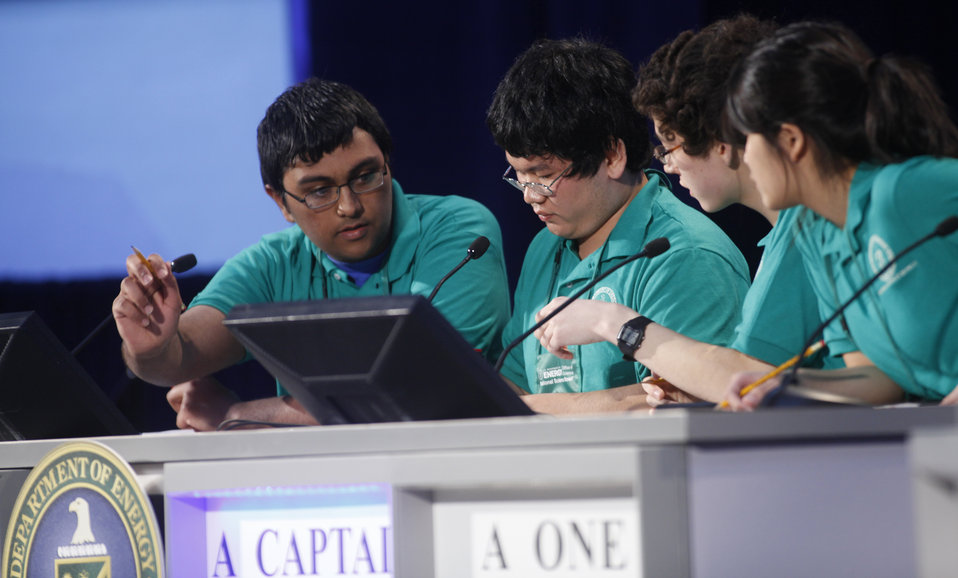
The Lexington High School team from Lexington, Massachusetts concentrates on the answer to a question during the final match of the 2012 National Science Bowl on April 30, 2012. They won first prize.
DOE created the National Science Bowl in 1991 to encourage students to excel in mathematics and sciences and to pursue careers in these fields. The department supports mathematics and science education to help provide a technically trained and diverse workforce for the nation. More than 2000,000 students have participated in the National Sciences Bowl throughout its history.